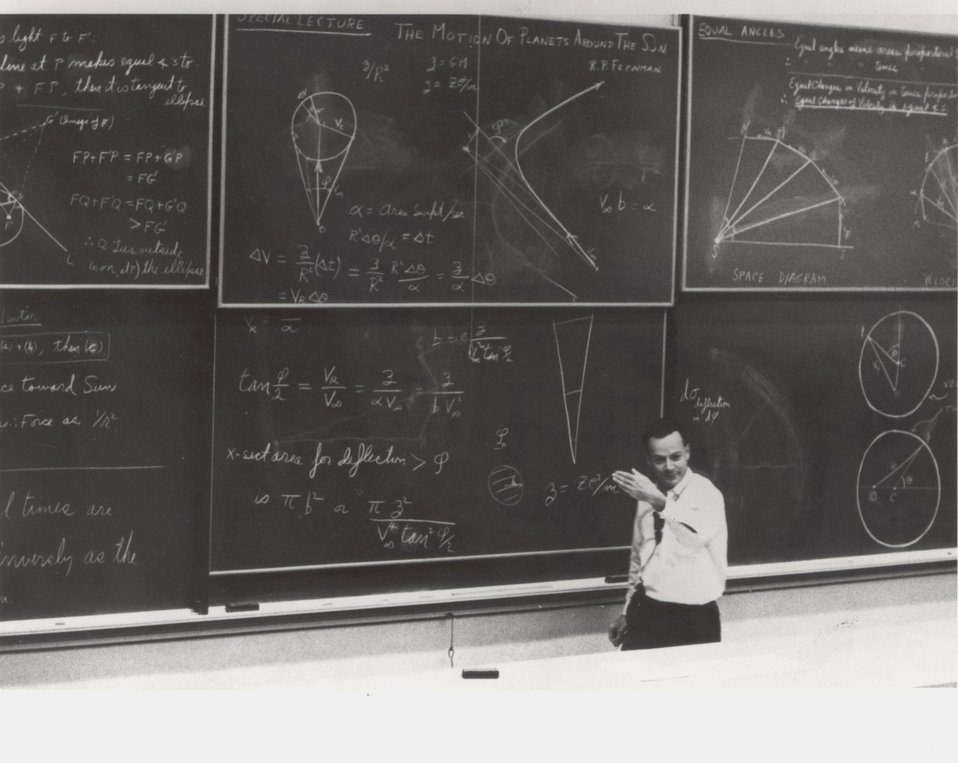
Dr. Richard Feyman.